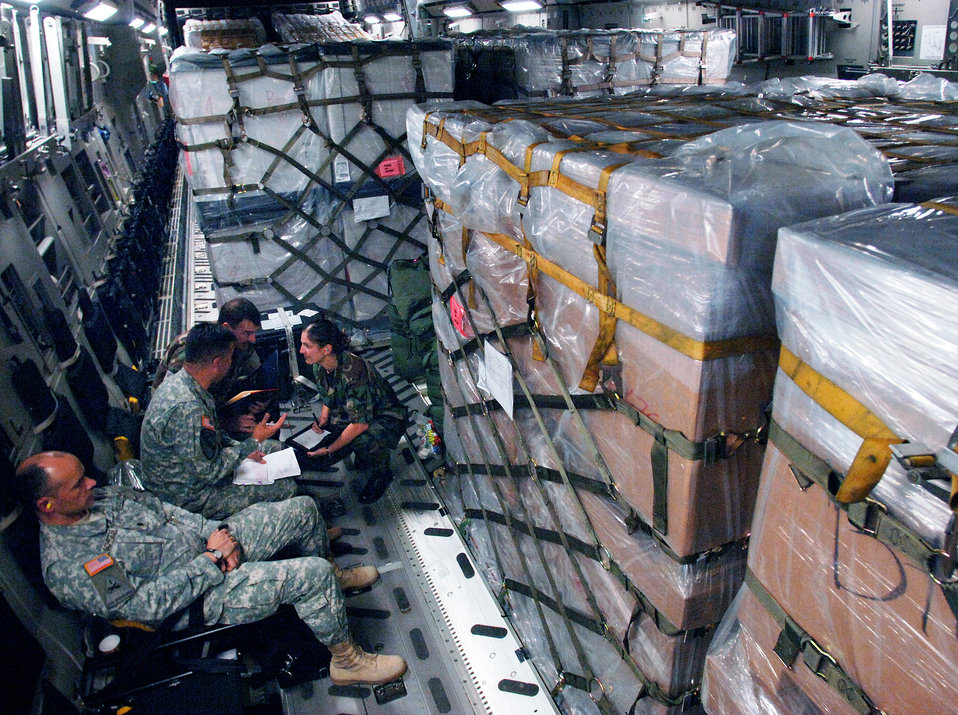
Ramstein members deliver aid to Georgia

While en route to Tbilisi, Georgia, from Ramstein Air Base, Germany, a small group of Army, Navy and Air Force members discuss details of the joint humanitarian assistance delivery Aug. 13. The delivery consisted of $1 million in U.S.-donated medical supplies, blankets, sleeping bags and bed sheets for the people of the Republic of Georgia.